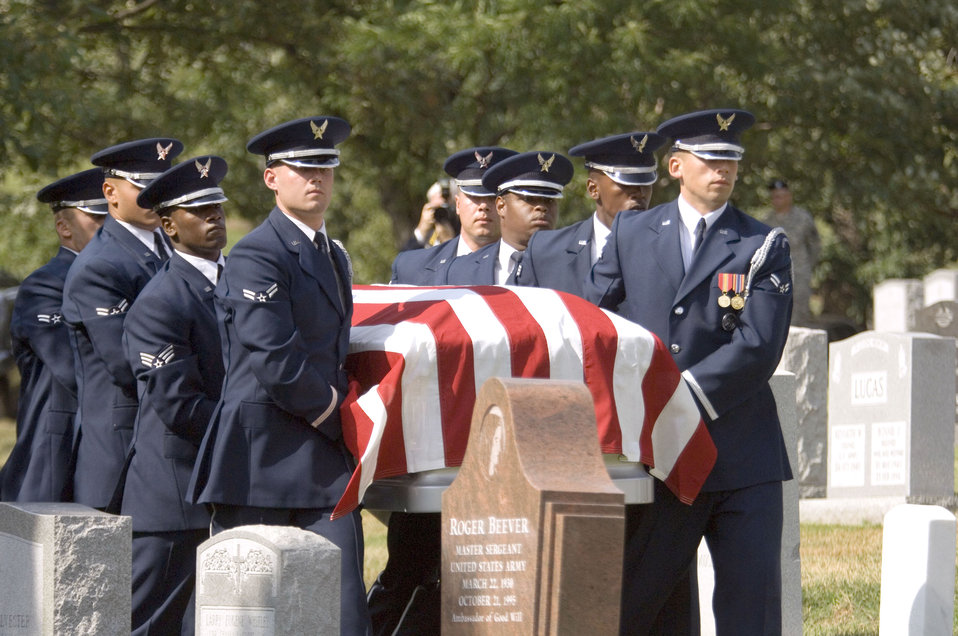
Military pays tribute to World War II bomber pilot

The U.S. Air Force Honor Guard carries the casket of retired Maj. Gen. Jack I. Posner to his final resting place at Arlington National Cemetery on Aug. 11. General Posner was among the last bomber pilots to have served in World War II.